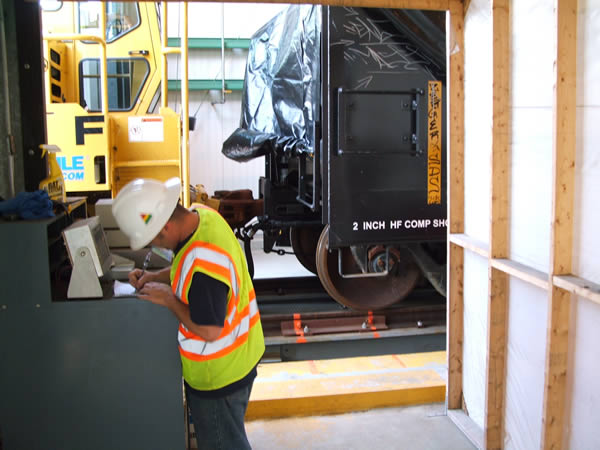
September 2009, rail cars are weighed to track the amount removed and disposed of